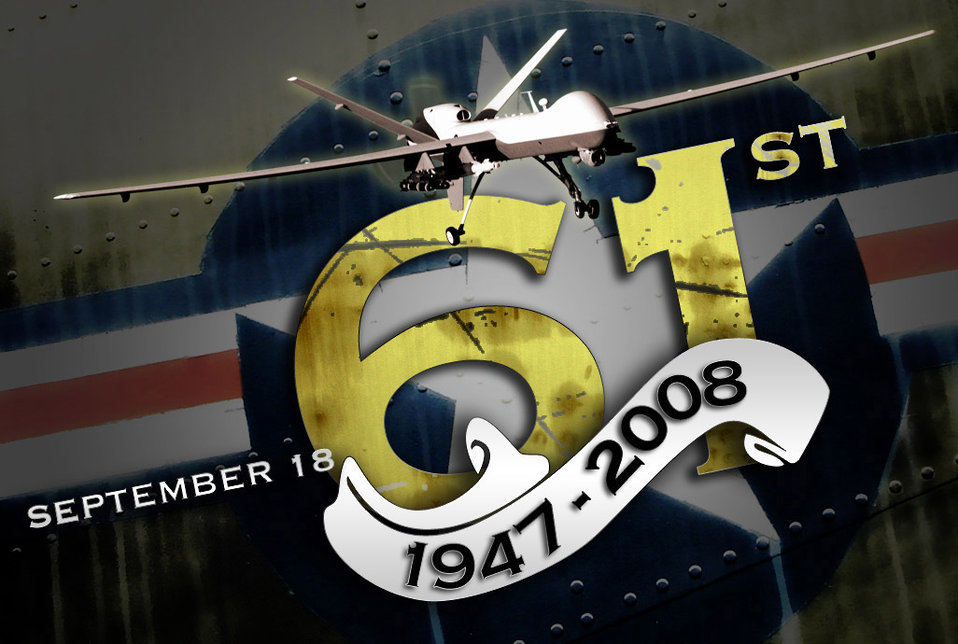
Donley, Schwartz send birthday message

In a joint Letter to Airmen, Acting Secretary of the Air Force Michael B. Donley and Air Force Chief of Staff Gen. Norton A. Schwartz present the 61st Air Force birthday message.